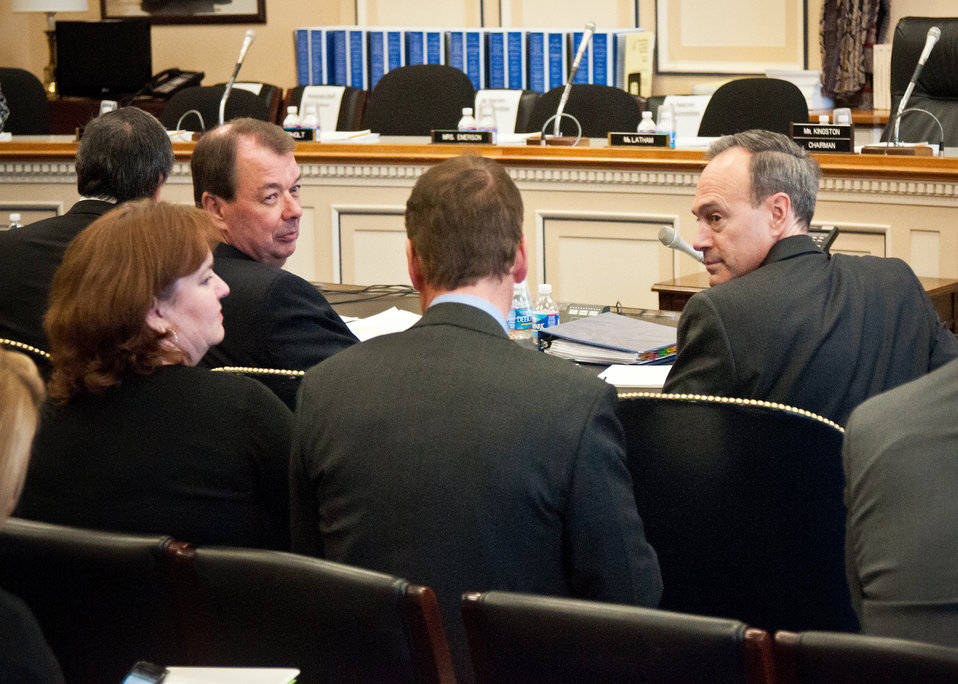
Robert Keeney (left), Acting Administrator, Agricultural Marketing Service and Alan Christian (right), Acting Administrator, Grain Inspection Packers and Stockyards Administration confer with Randall Jones, Administrator, Federal Grain Inspection Service prior to testifying on Capitol Hill before the House Agriculture Appropriations Subcommittee on fiscal year 2013 budget requests for Marketing and Regulatory Programs in Washington, D.C., Tuesday, March 6, 2012.